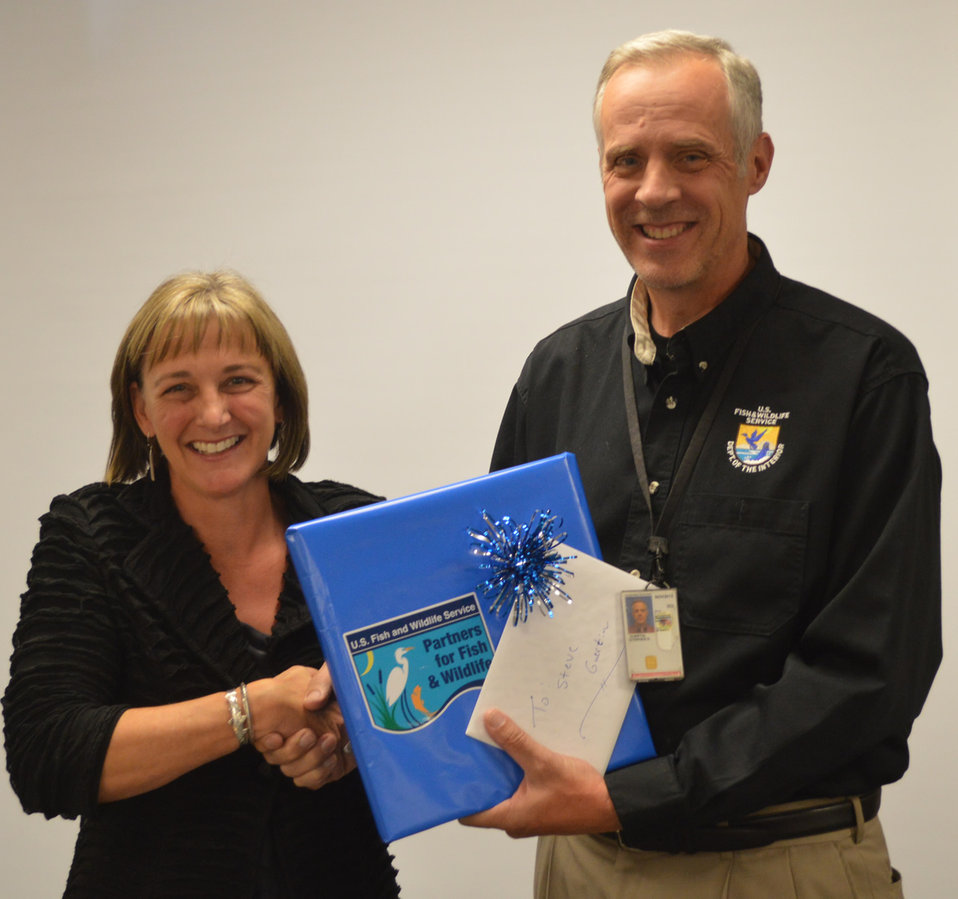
Regional Director Steve Guertin Moves on to Senior Leadership Position

On November 1, 2012, USFWS Mountain-Prairie Regional Director, Steve Guertin, served his last day as Regional Director before moving on to a senior leadership position at Headquarters.

Regional leadership and partners shared their memories of Steve's outstanding leadership and his unique ability to leverage his outstanding technical skills while maintaining a very personable persona - all amidst a variety of challenging issues.